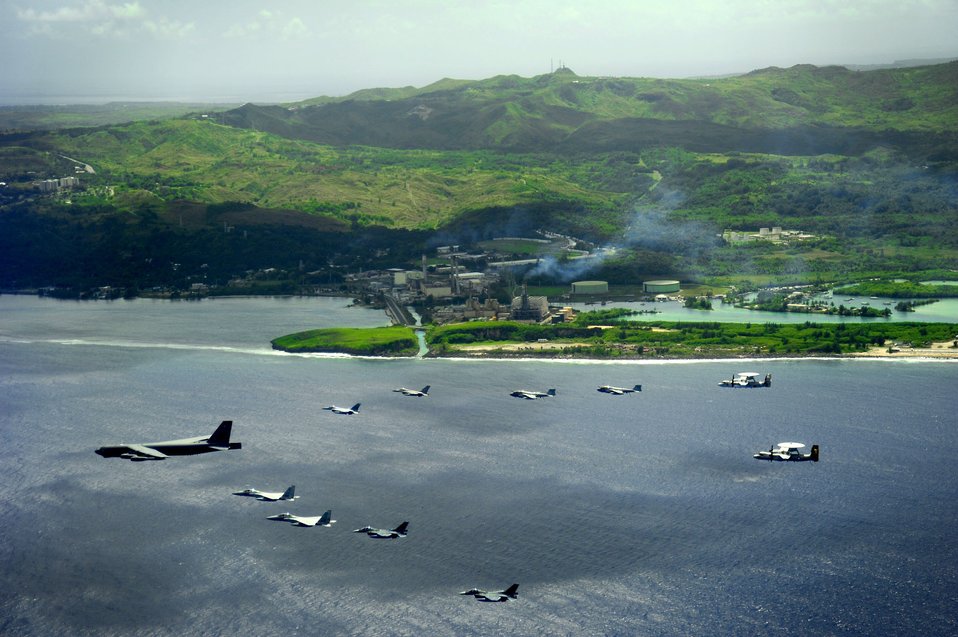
Airmen participate in exercise Cope North

A formation of aircraft flies over Guam Feb. 21, 2011, during exercise Cope North.